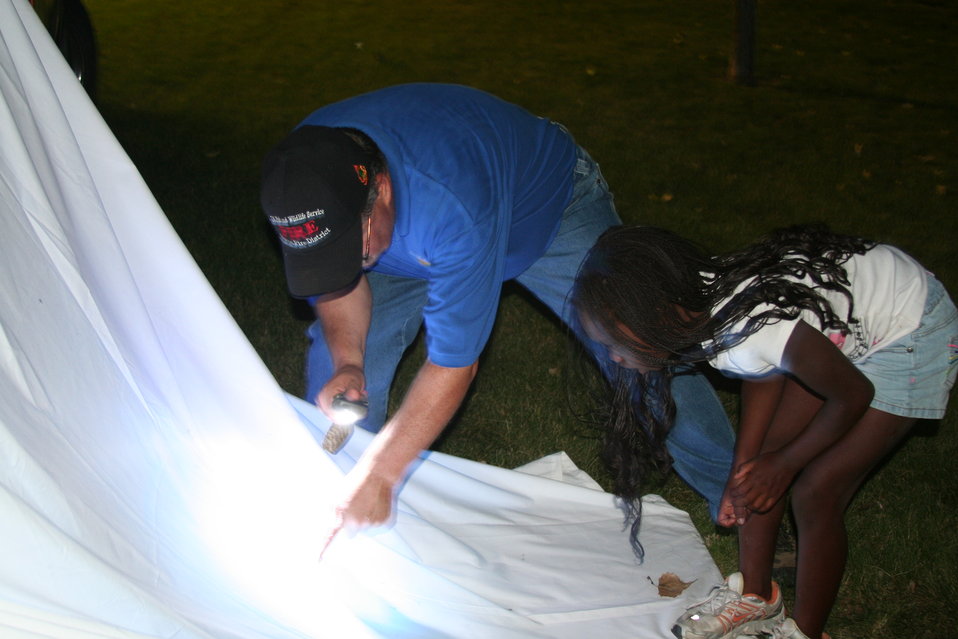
Creatures of the Night 2011

FWS staff showing children different bugs that can be found at night. Bugs show up really well on a white sheet.